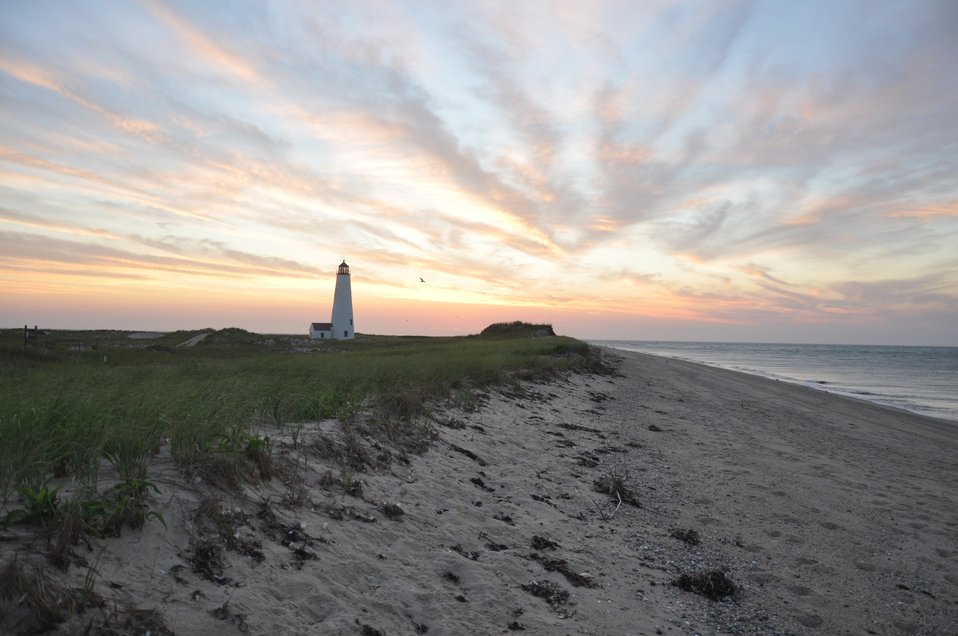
Nantucket lighthouse

Nantucket National Wildlife Refuge, MA.